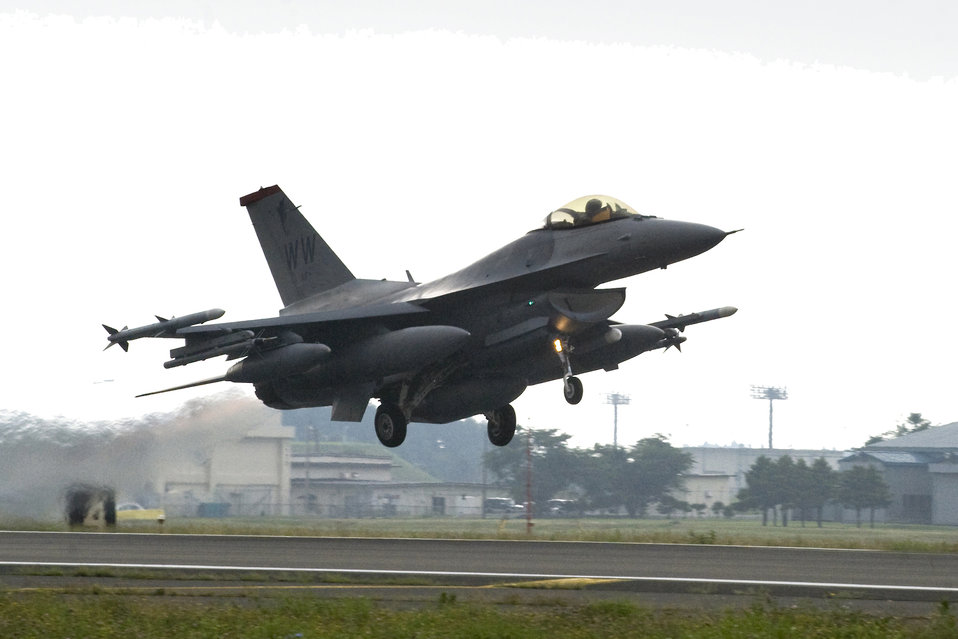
Falcon maintenance

An F-16 Fighting Falcon takes off at Misawa Air Base, Japan.